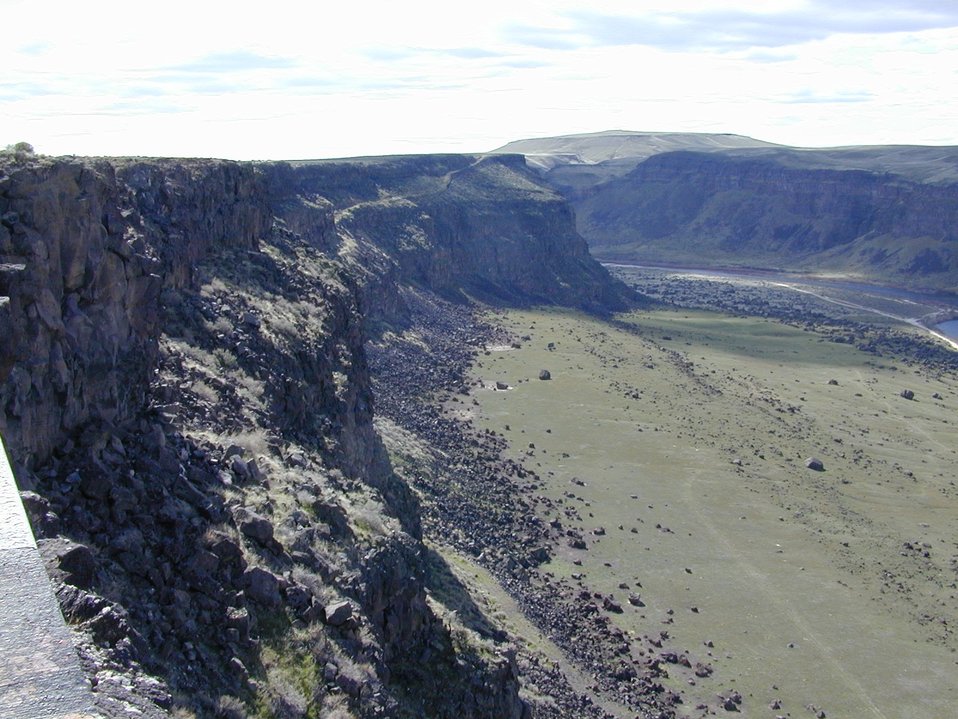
Snake River Birds of Prey National Conservation Area Lower Snake River District LSRD Snake River Canyon Scenic